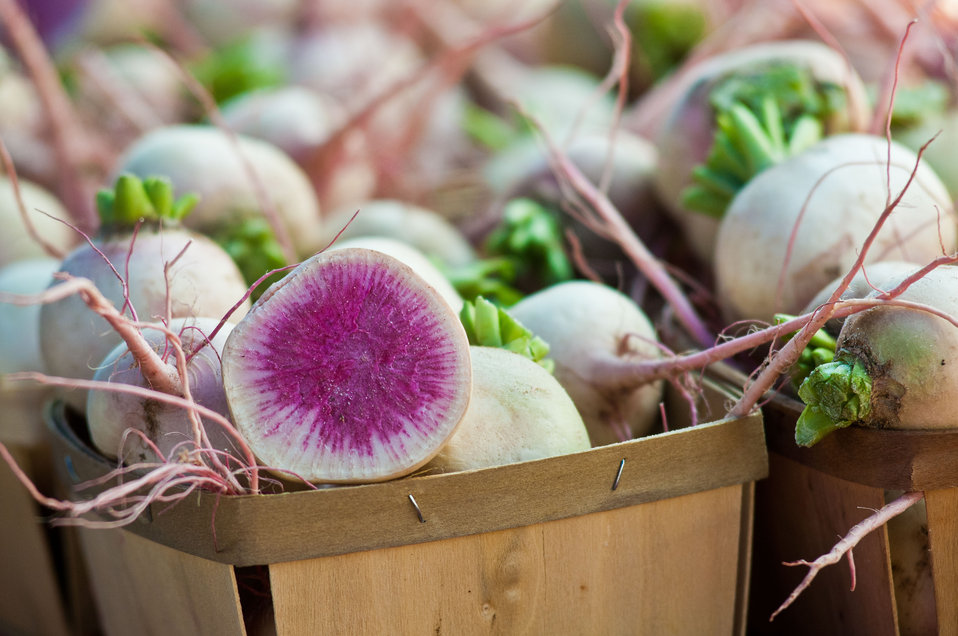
Worden Farm (www.wordenfarm.com) fresh picked organic watermelon radish ready for sale at the Saturday Morning Market, in St. Petersburg, FL, on April 14, 2012. Worden Farm is a family farm that provides certified organic produce to Southwest Florida through community supported agriculture (CSA) membership programs and retail sale at several farmer’s (community) markets. Chris Worden, Ph.D. and Eva Worden, Ph.D. founded and operates the farm that employs more than 20 people. Growing certified organic crops in the coastal sandy soil has required them to develop innovative farming techniques which help the farm as well as assist the studies of universities and farm industry. There are several Worden Farm apprenticeships that provide hands-on training in all aspects of the farm, to include direct marketing at the Saturday Morning Market, or other market sites. The farm also holds culinary and gardening workshops, and other interactive educational events. One of their organic certifications is from the U.S. Department of Agriculture (USDA) and they have partnered with the USDA Natural Resources Conservation Service (NRCS) for soil conserving windbreaks and long tunnel structures to nurture seedlings and extend the growing season.